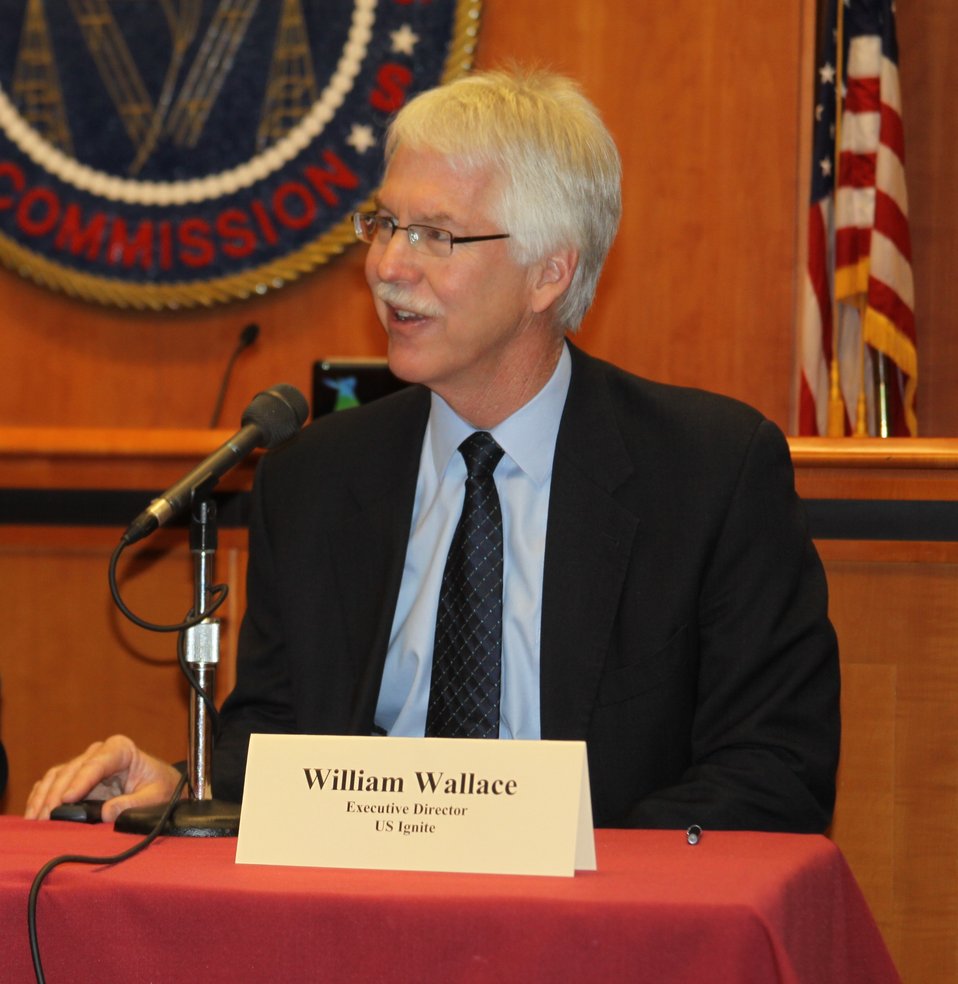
March 27, 2013 Gigabit City Challenge: Broadband Networks Workshop Panel 1: What Communities Can Do With A Gigabit